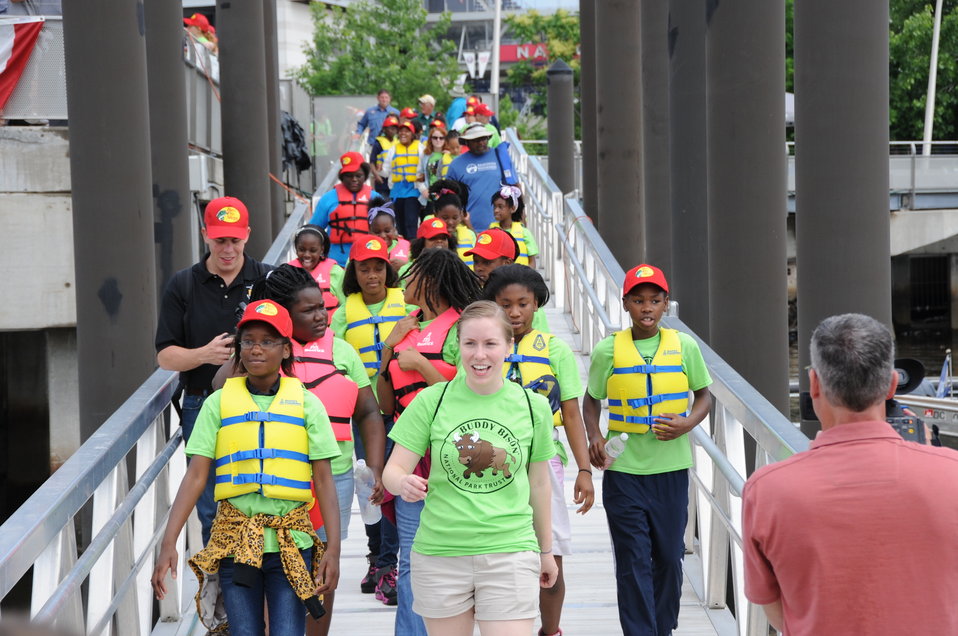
2013 National Fishing and Boating Week

Local students prepare to enjoy fishing at the annual kick-off of National Fishing and Boating Week on the Anacostia River in Washington D.C.